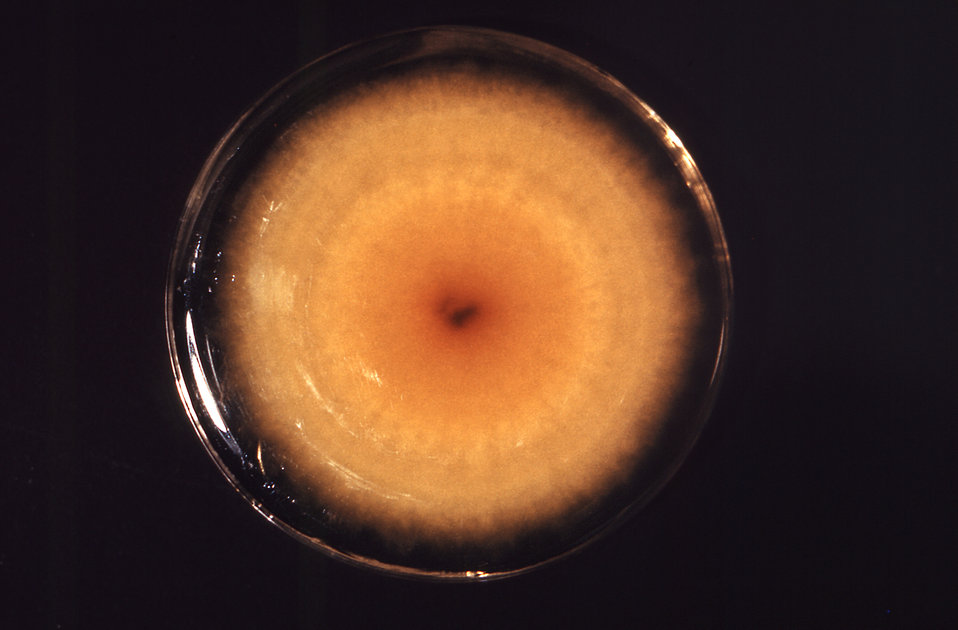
This image depicts a reverse view, i.e., viewed from the back, of a Petri dish culture plate in which a colony of the dermatophyte, Trichophyton mentagrophytes had been cultivated. Note the red coloration of this large colony. From the front, T. mentagrophytes colonial coloration ranges from white to bright yellowish-beige, to red-violet.